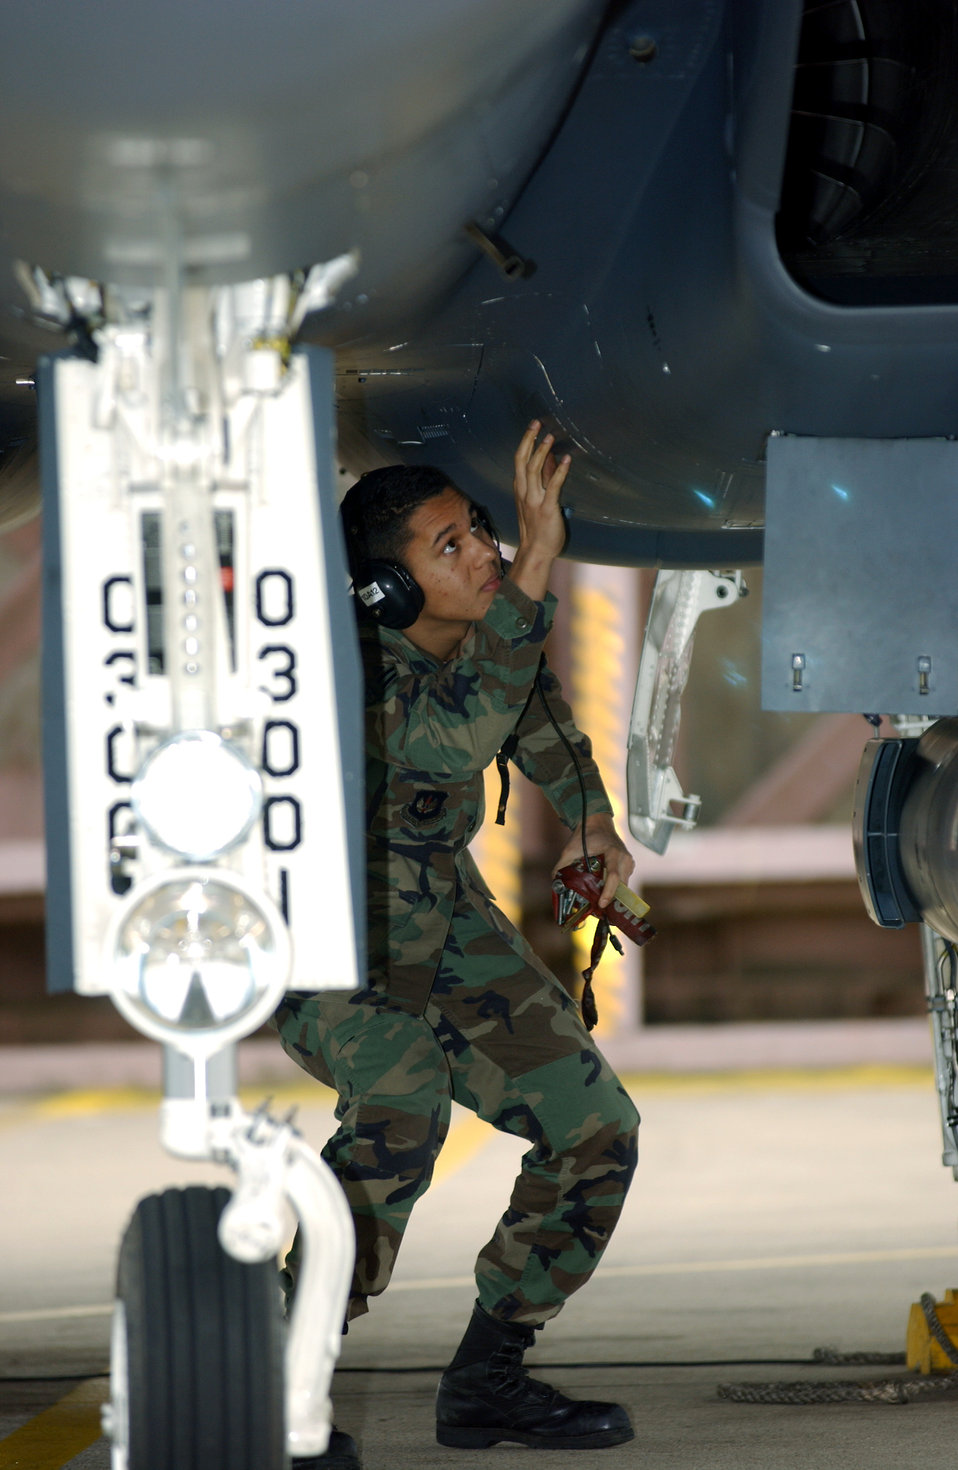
Preflight

ROYAL AIR FORCE LAKENHEATH, England -- Airman 1st Class Christopher Fandrei goes through preflight checks before launching an F-15E Strike Eagle here April 14. Airman Fandrei is a crew chief assigned to the 48th Aircraft Maintenance Squadron.